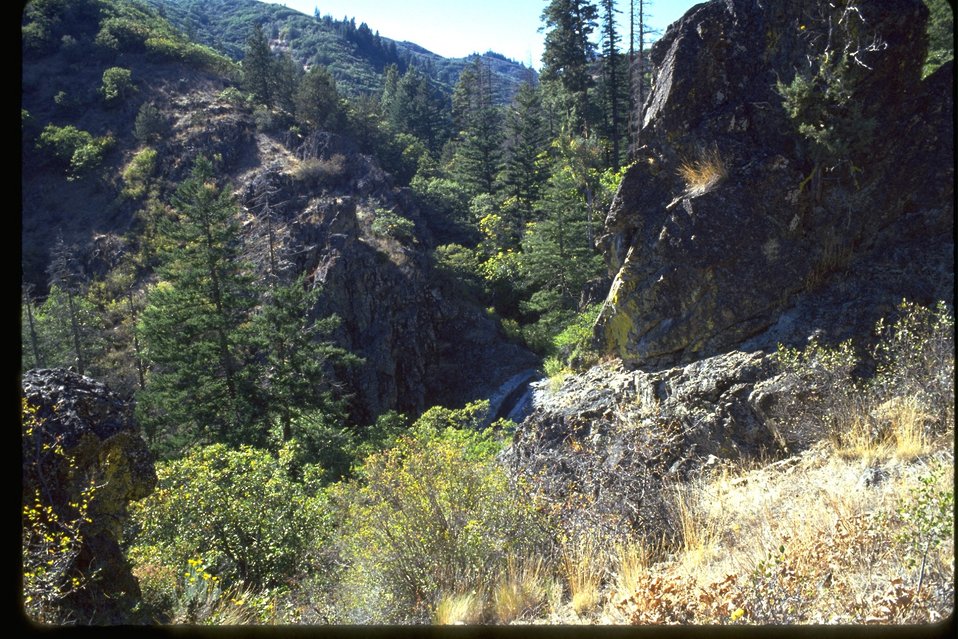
Scotch Creek RNA, ridge southeast of Scotch Creek Falls.